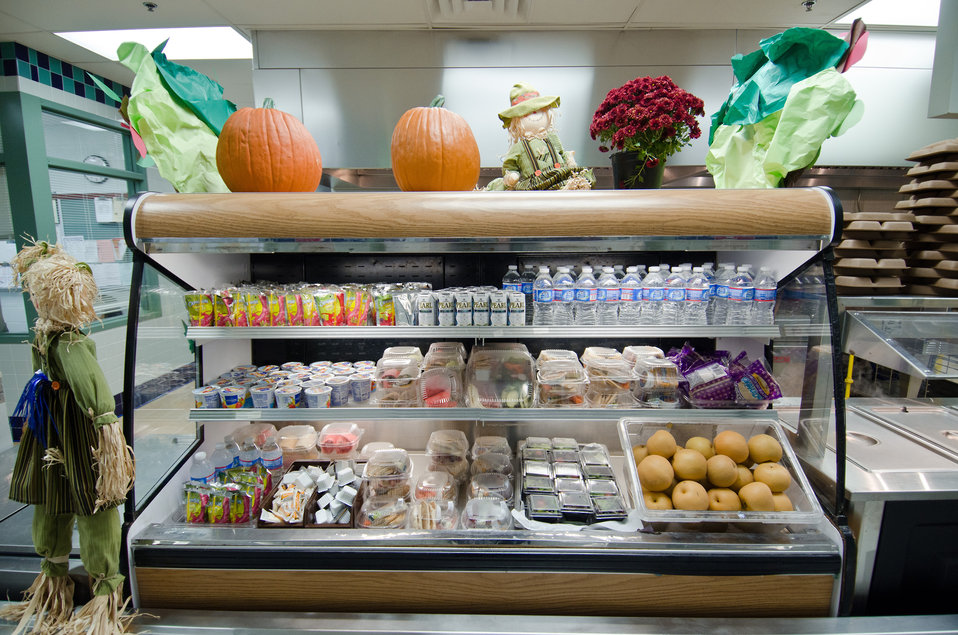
The deli display for the school lunch program at Nottingham Elementary School in Arlington, VA, on Wednesday, October 12, 2011. It contains, 100% juice packets, organic soy milk, nonfat yogurt, turkey wraps, pita wedges, farm fresh mixed lettuce salad, whole wheat bread sandwiches, Asian pears, and bottled water. Today's menu also included roasted chicken, roasted butternut squash with dried cranberries, hot muffins, and more.